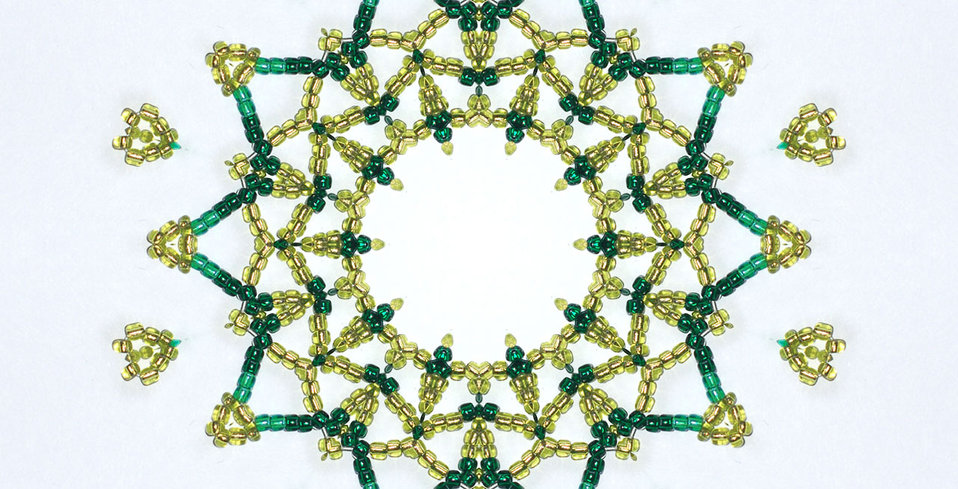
Lime green beads

Lime and dark green beads kaleidoscope.